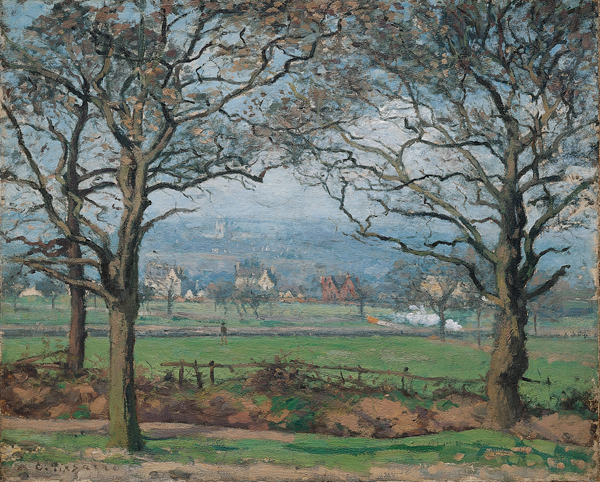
'Near Sydenham Hill', oil on canvas painting by Camille Pissarro